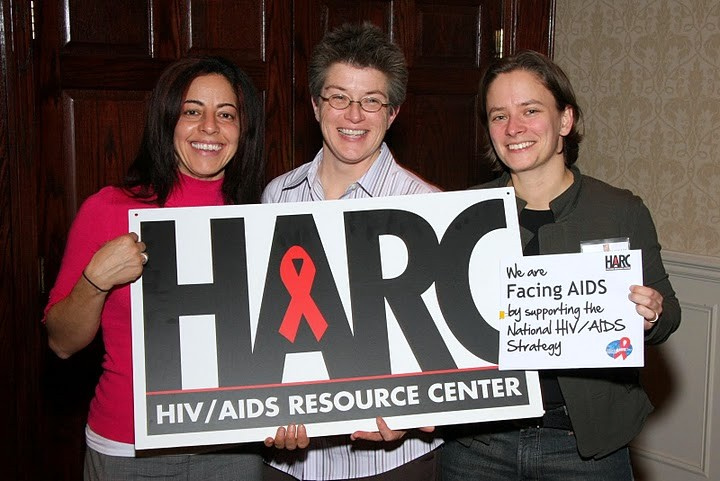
We are Facing AIDS through NHAS-38